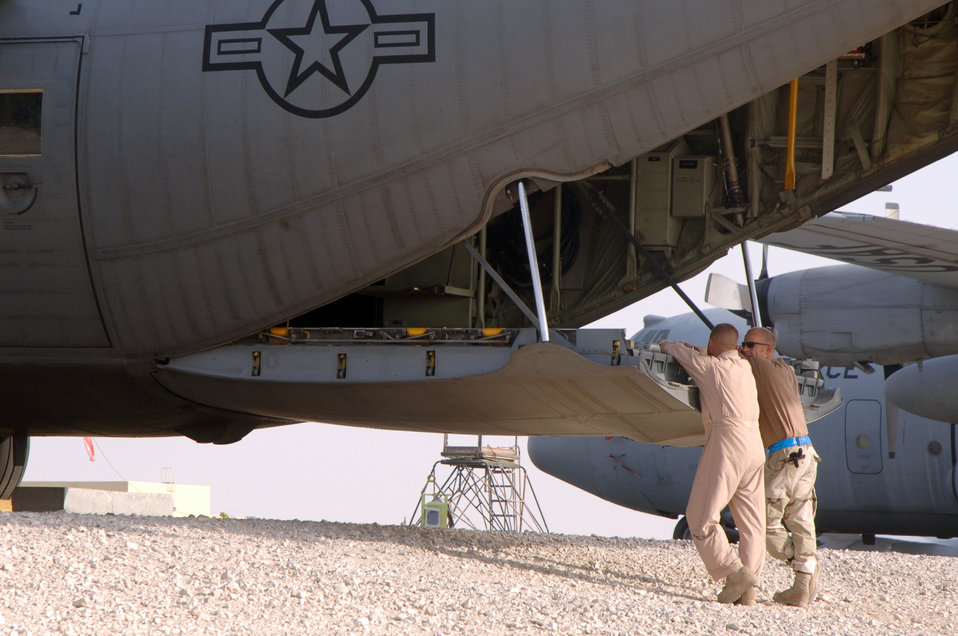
Deployed Hercules

SOUTHWEST ASIA (AFPN) -- Two Airmen from the 746th Expeditionary Airlift Squadron wait while their C-130 Hercules is prepared for tow at a deployed location Feb. 5. The aircraft and crew are from the Niagara Falls Joint Air Reserve Station, N.Y.